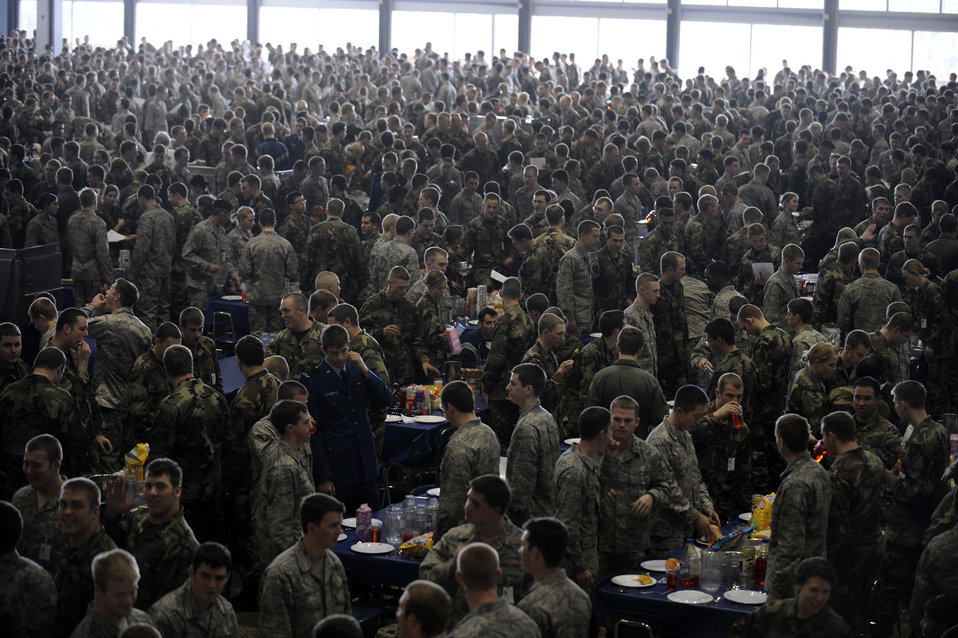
U.S.Air Force Academy Mitchell Hall Cadet Dining Facility

Cadets stand beside their chairs Jan. 23 as they wait for the rest of the approximately 4450 cadets to enter Mitchell Hall Cadet Dining Facility at the U.S. Air Force Academy in Colorado Springs, Colo. so they can begin lunch. The dining facility feeds approximately 4450 cadets and sits on 1.75 acres.